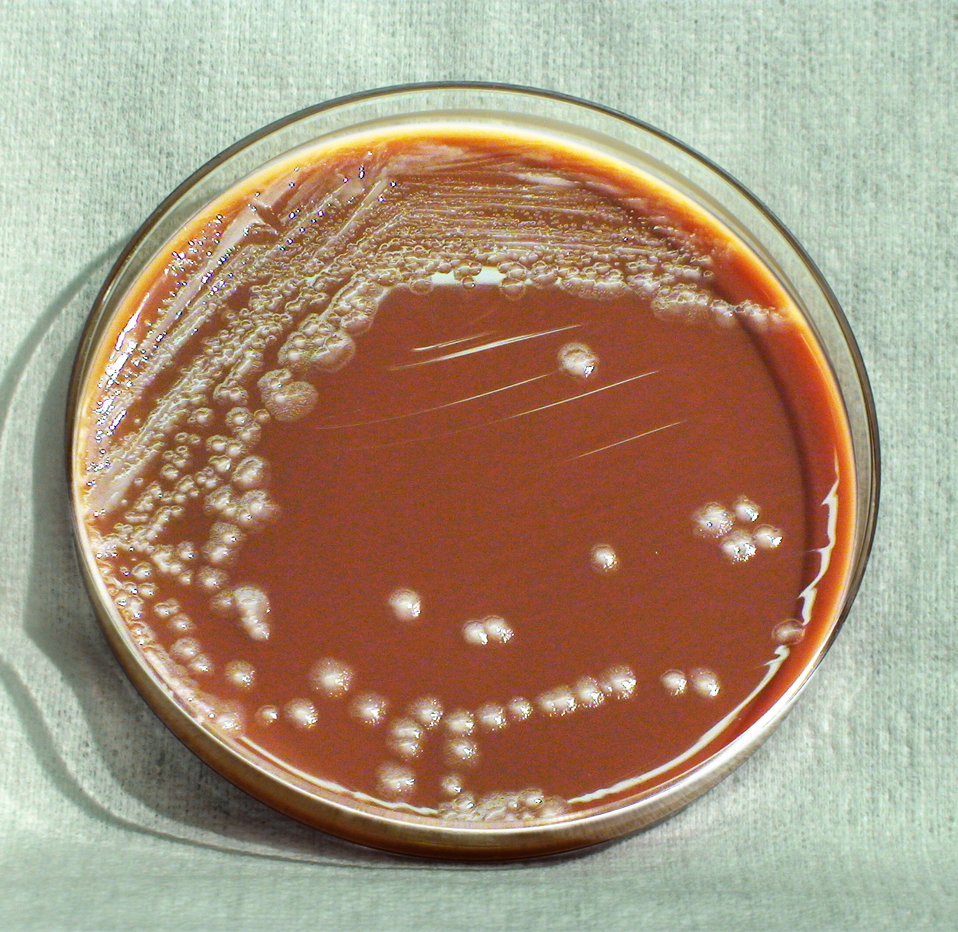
This photograph depicts the colonial morphology displayed by Gram-negative Yersinia pestis bacteria, which was grown on a medium of chocolate agar, for a 72 hour time period, at a temperature of 25�C. Note that PHIL 12470 displays a closer view of these Y. pestis bacterial colonies. See also PHIL 12468 for the appearance of Y. pestis colonies grown on the same medium, and at the same time temperature, but for a lesser time period (48hr); PHIL 12471 displaying growth on the same medium, but for a lesser time period (48hr), and at a greater temperature (37�C); PHIL 12472 displaying growth on the same medium, for the same amount of time, but at a greater temperature (37�C); PHIL 12473 displaying Y. pestis colonies grown on the same medium and temperature, but at one-third the time (24hr).